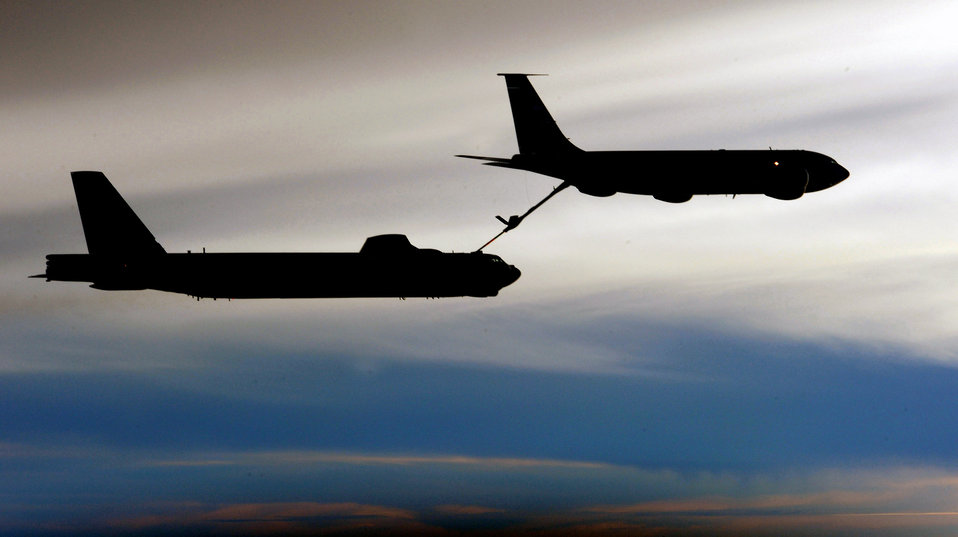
Gas and go

A KC-135 Stratotanker refuels a B-52 Stratofortress over the Pacific Ocean Jan. 22 during exercise Tropic Fury at Andersen Air Force Base, Guam. The exercise trains aircrews on the use of different missile weapon systems.